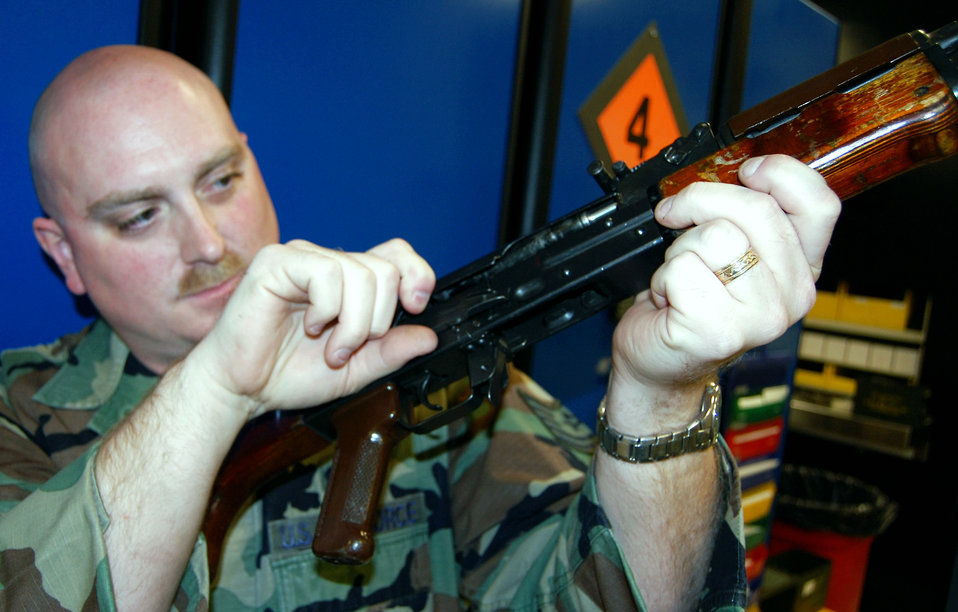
Expeditionary Center armory fires up training for Airmen

Tech. Sgt. Sean Heraty inspects an AK-47 while working in the armory Sept. 22 at Fort Dix, N.J. Sergeant Heraty and three other Airmen manage 48 different weapons systems and 153 different types of foreign weapons in their armory -- the most foreign weapons than any armory in the Air Force. Sergeant Heraty is the Air Force Expeditionary Center armory assistant noncommissioned officer in charge. The weapons they care for support more than 7,000 students annually who attend the center's expeditionary courses.